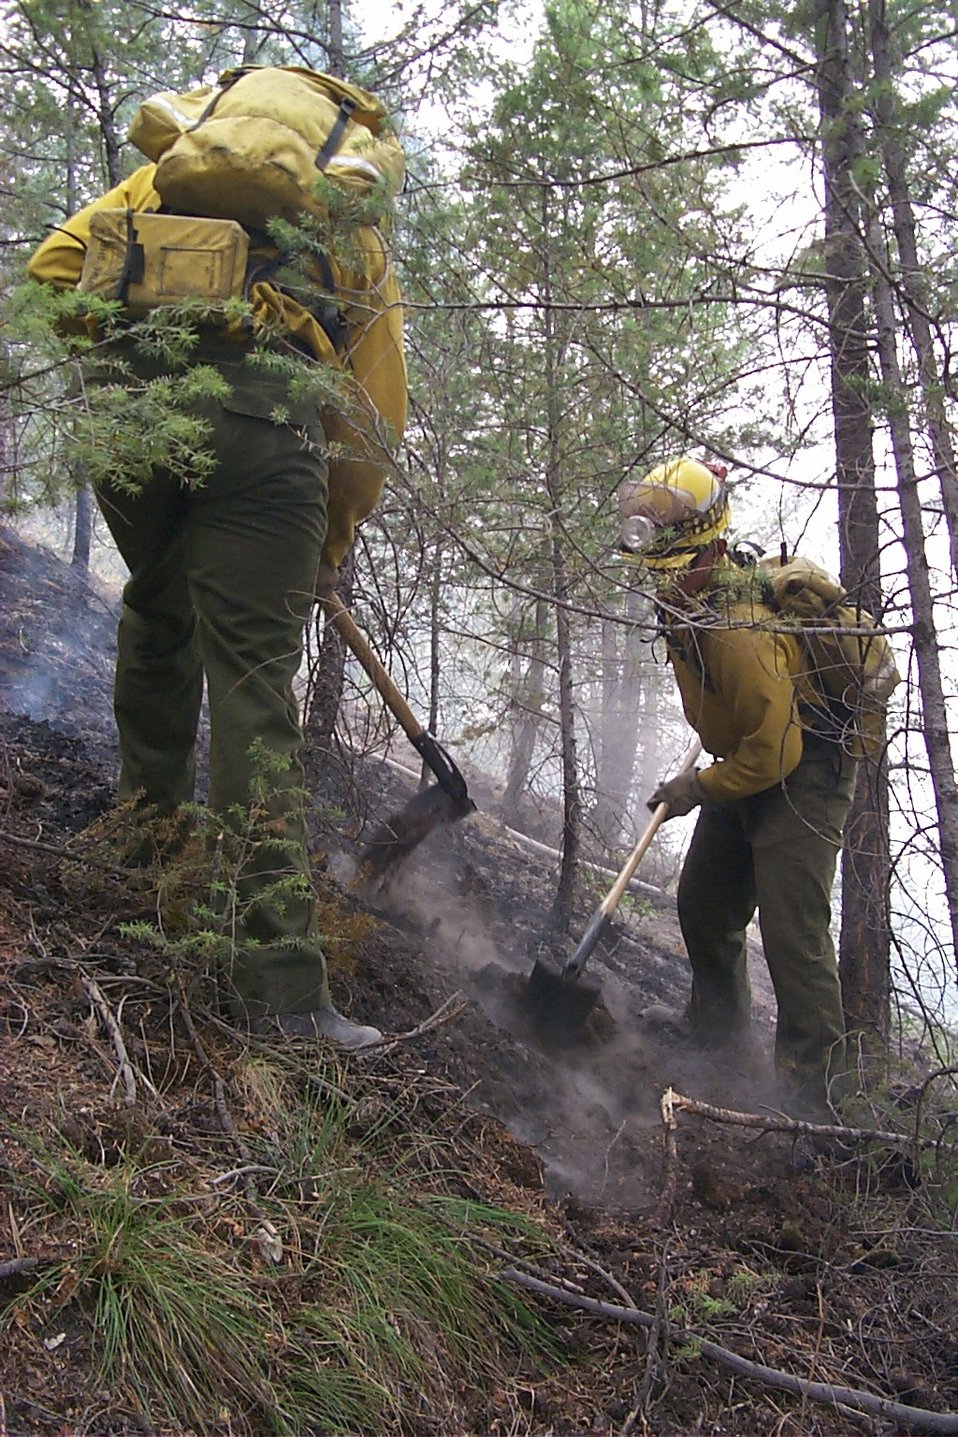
Line crew Fire Clearwater Fire Salmon Field Office USRD Upper Snake River District